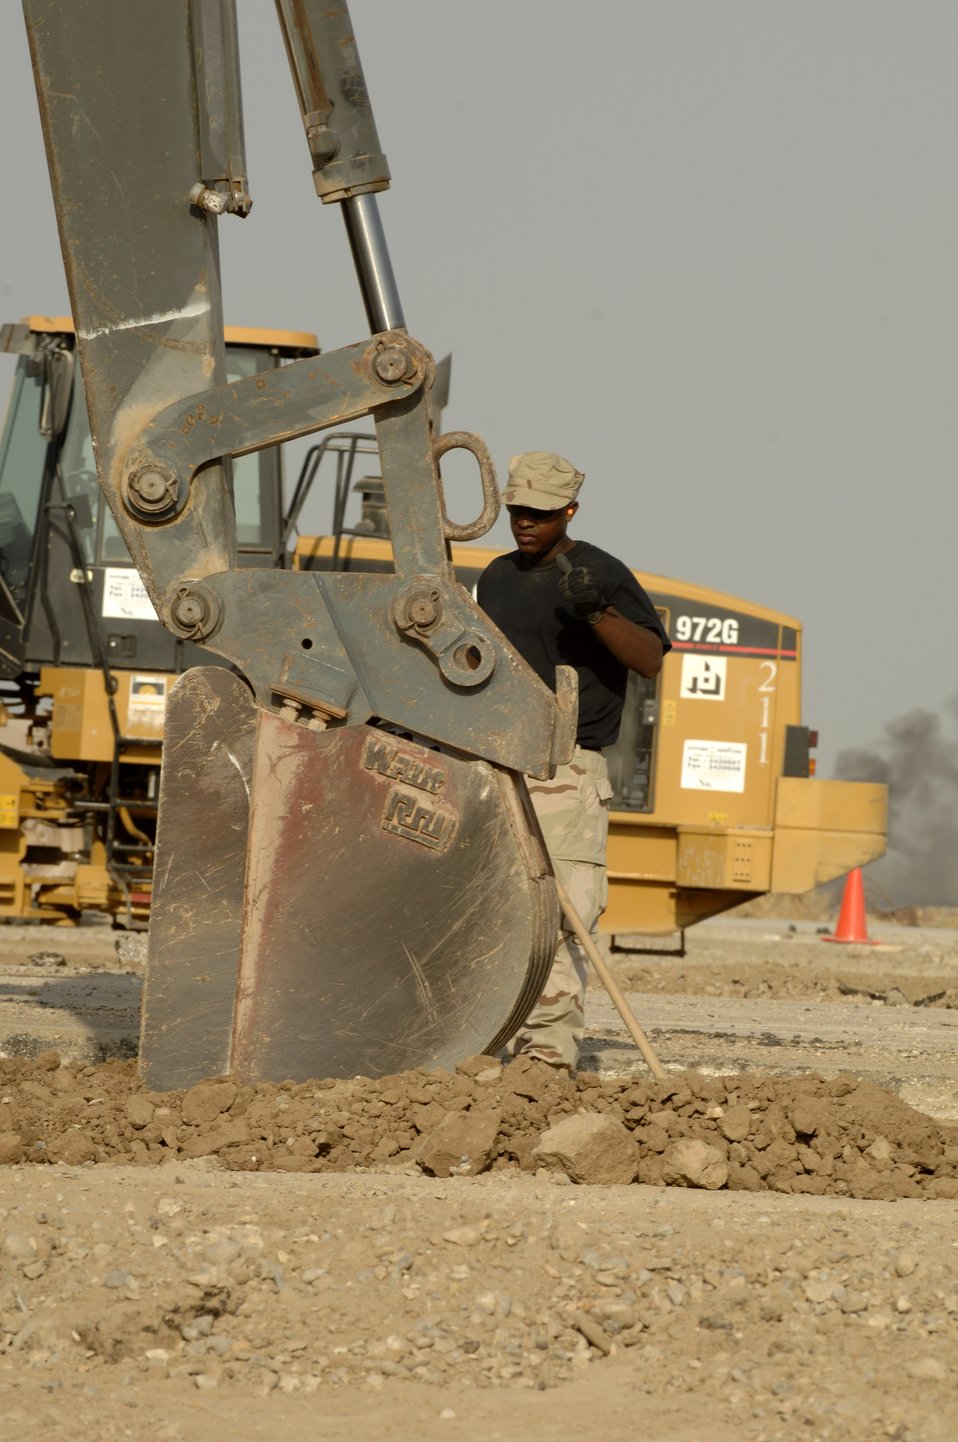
Down and Dirty

Senior Airman Paul Davis guides the excavator that is digging a trench Oct. 3 for concrete footers for sun shades being installed on the Ali Base, Iraq, flightline. Airman Davis and other Airmen in the 407th Civil Engineer Squadron are working around the clock to build the sun shades by November.